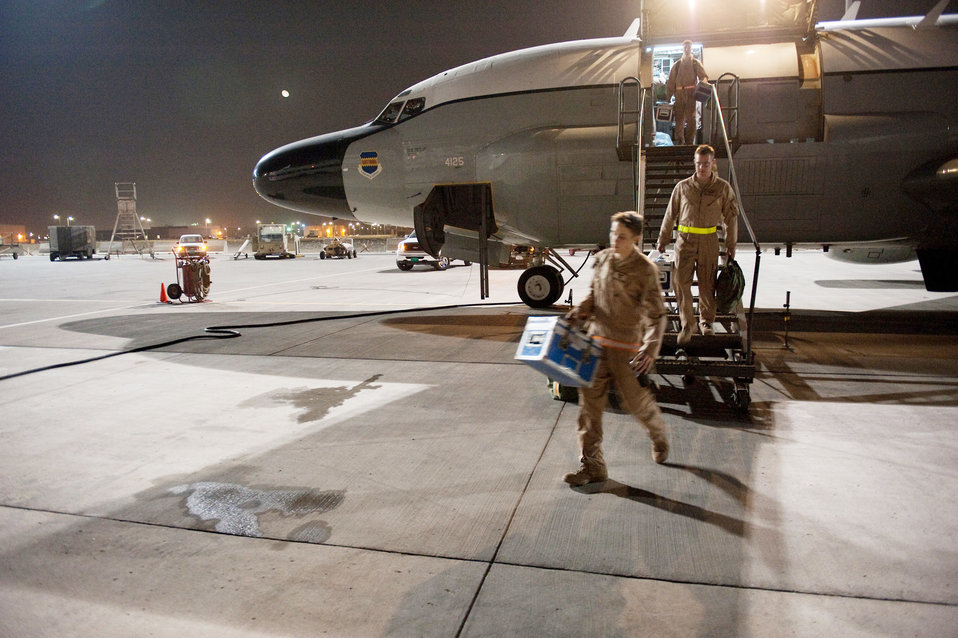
Unit surpasses consecutive 7,000 days with forces in Southwest Asia

Crewmembers from the 763rd Expeditionary Reconnaissance Squadron exit a RC-135V/W Rivet Joint Oct. 7, 2009, at an air base in Southwest Asia. The squadron marked the 7,000th consecutive day in the U.S. Central Command area of responsibility for the RC-135V/W Oct. 7.